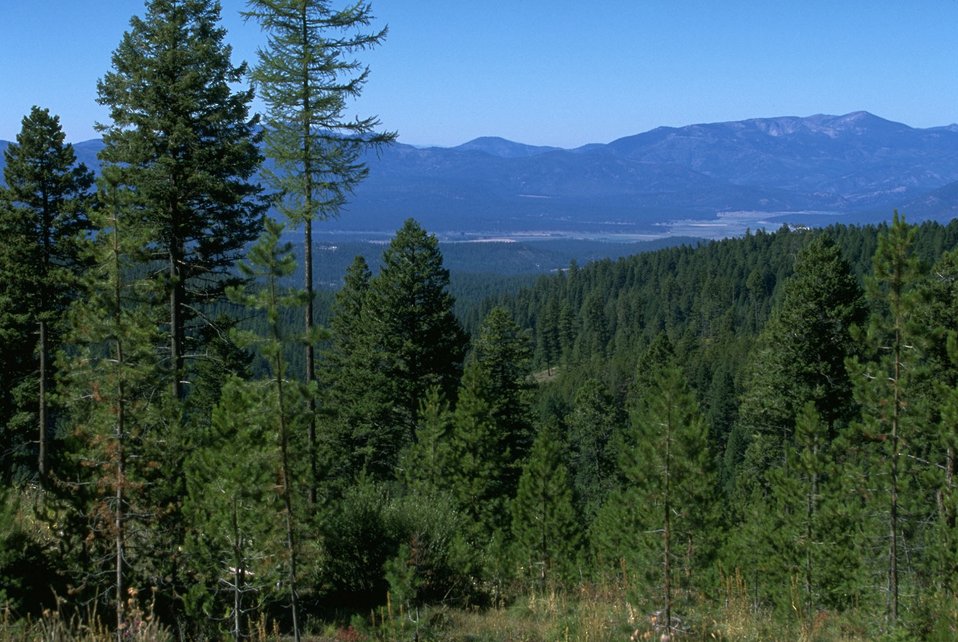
View from Garnet Back Country Byway